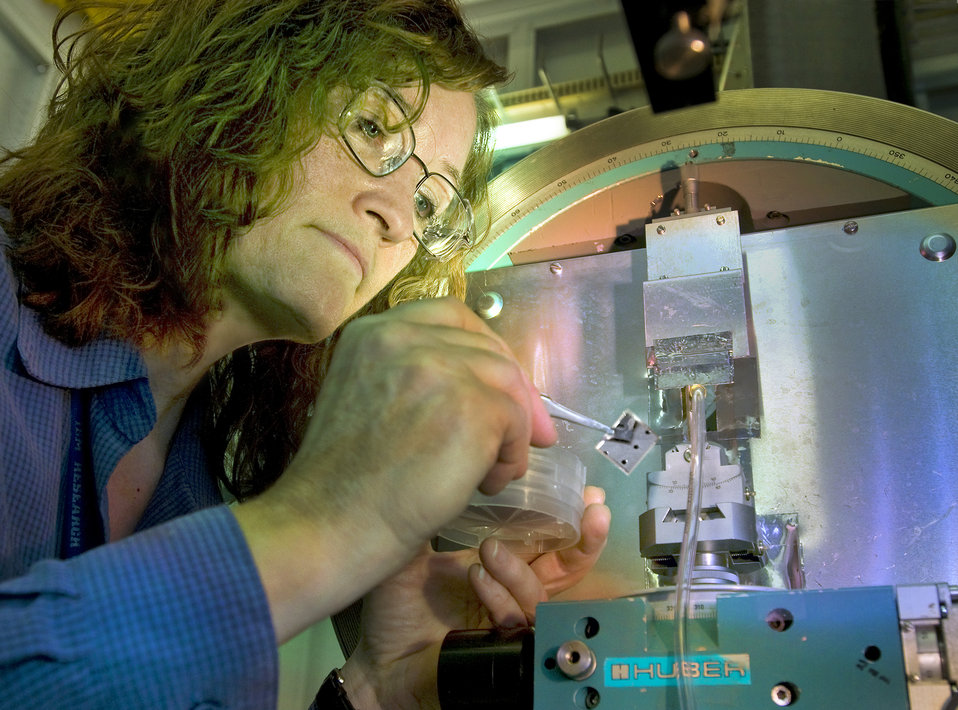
Researcher at BNL loads a silicon wafer sample into the diffractometer at the National Synchrotron Light Source (NSLS) Beamline X20A for her colleagues performing a remote access experiment.
Synchrotron-based x-ray diffraction techniques have become largely automated, yet researchers must still travel from all over the world to Brookhaven's National Synchrotron Light Source (NSLS) simply to load their samples and program a few computer parameters before the system takes over.